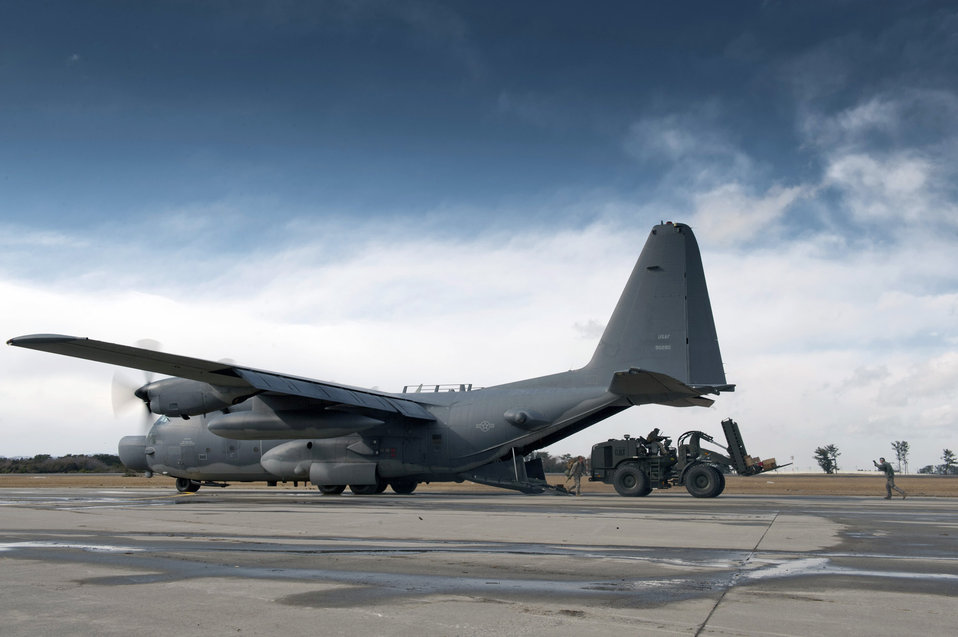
MC-130H Combat Talon II arrives at Sendai Airport

Airmen unload supplies and a forklift from an MC-130H Combat Talon II March 16, 2011, at Sendai Airport, Japan.